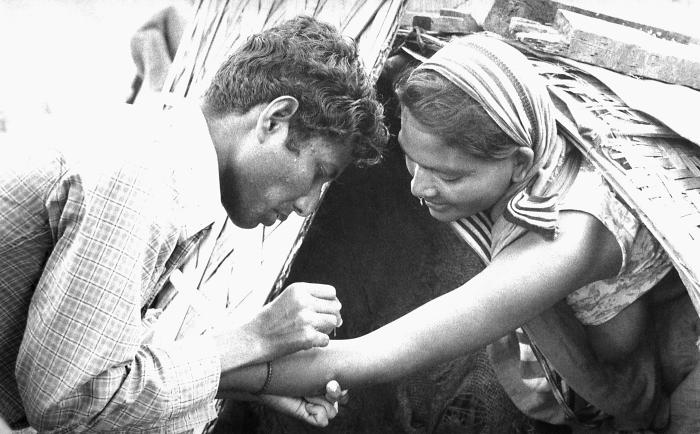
This volunteer smallpox eradication team vaccinator was in the process of administering a vaccine to a woman who at the time, was living with her family in a bastee, which was an illegal settlement. The bastees were a place where no governmental facilities were present, and where poverty ran rampant. In this image, the bifurcated needle is clearly depicted, as the vaccinator pricks the skin of the vaccinee with the needle after it had been tipped with live vaccinia virus. The smallpox vaccine helps the body develop immunity to smallpox. The vaccine is made from a virus called vaccinia which is a 'pox'-type virus related to smallpox. The smallpox vaccine contains the 'live' vaccinia virus, not the dead virus, which is the case in many other vaccines. For that reason, the vaccination site must be cared for carefully to prevent the virus from spreading. Also, the vaccine can have side effects. The vaccine does not contain the smallpox virus and cannot give you smallpox.